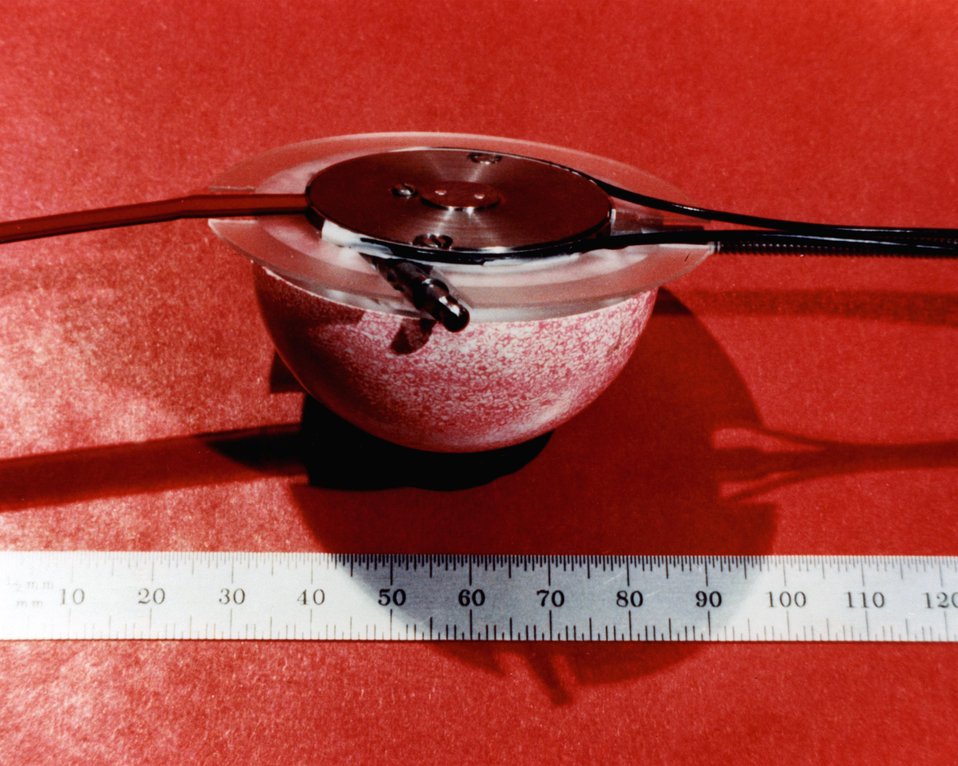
VIEW OF BOOSTER WITH SCALE.

AT THE MOUND FACILITY, RESEARCHERS WORK ON EXPLOSIVES TECHNOLOGY, TRITIUM TECHNOLOGY, PLUTONIUM-238 ISOTOPIC HEAT SOURCE DEVELOPMENT AND ASSEMBLY, AND ISOTOPIC SEPARATION. FABRICATING EXPLOSIVE COMPONENTS, SUCH AS DETONATORS,EXPLOSIVES TIMERS, AND EXPLOSIVES PELLETS, FOR NUCLEAR WEAPONS IS THE MAJOR PRODUCTION ACTIVITY. THE MOUND FACILITY STAFF IS DEVELOPING MATERIALS, PROCESSES, AND EQUIPMENT FOR POTENTIAL PRODUCTION APPLICATIONS TO SUPPORT PROGRAMS AT SEVERAL DOE LABORATORIES. THE MOUND FACILITY IS OPERATED FOR DOE BY MONSANTO RESEARCH CORPORATION. THE MOUND FACILITY DOES NOT STORE, HANDLE, OR OTHERWISE DEAL WITH COMPLETED NUCLEAR WEAPONS. BOOSTERS, ELECTROMECHANICAL DEVICES THAT ARE PART OF THE SAFEGUARDS SYSTEM IN A WEAPON, ARE ACTIVATED BY A REMOTE TRIGGER AND REQUIRE COMPLEX PUSHES AND PULLS (ENABLED BY MICRO-MACHINING) TO PREVENT ILLICIT USE OF A WEAPON.